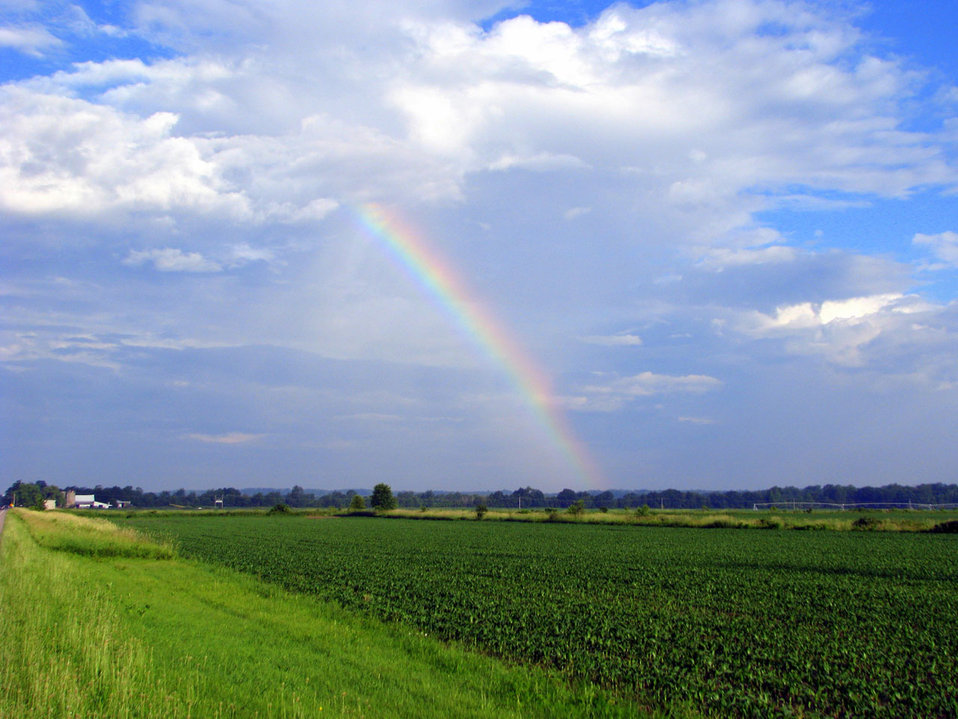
Summer rainbow over open field

Rainbow taken on the first day of summer, plainwell, mi..